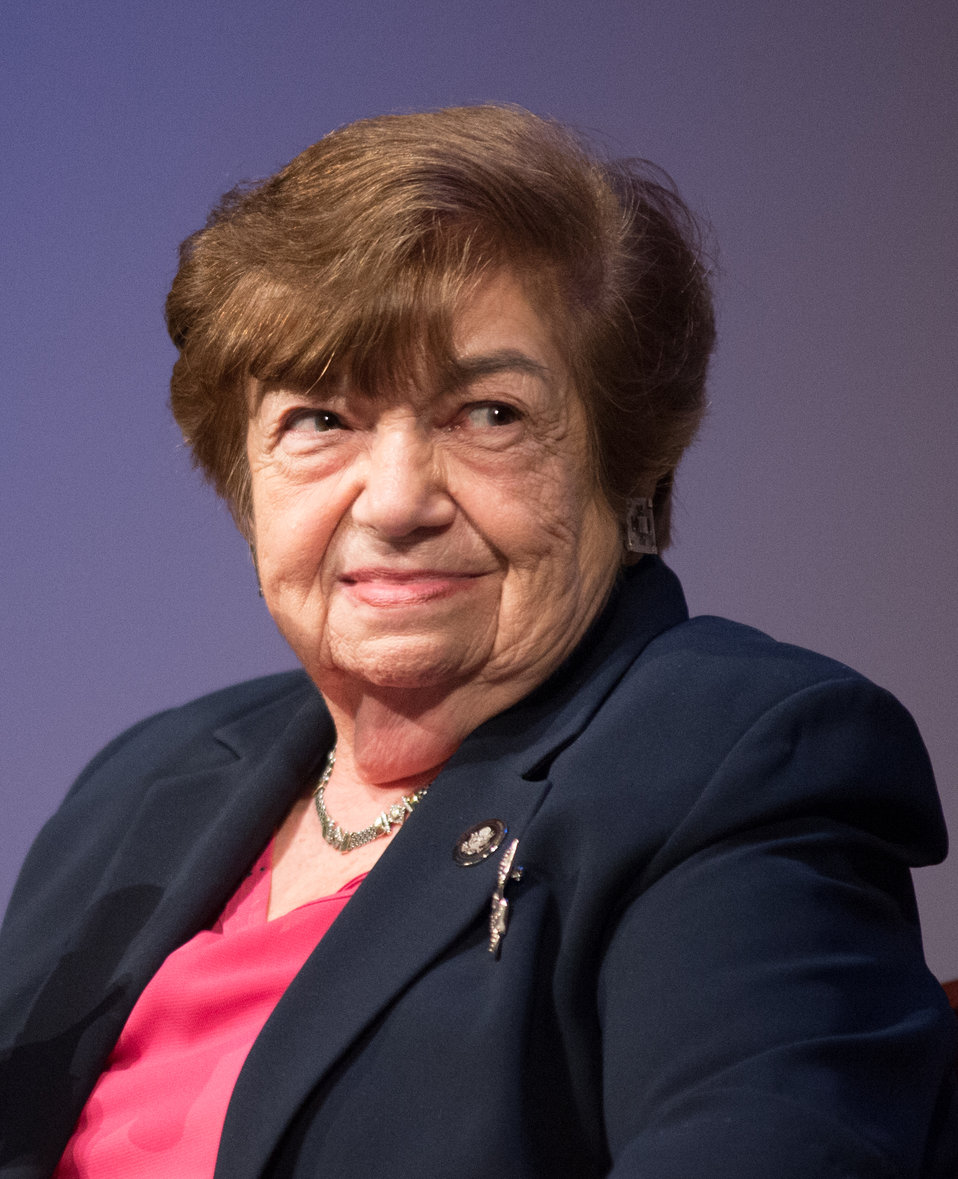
Theresienstadt Concentration Camp Czech Jewish Holocaust Survivor Ela Stein-Weissberger spoke during the 2013 Federal Inter-Agency Holocaust Remembrance Day, at the Lincoln Theater, on Wednesday, April 17, 2013, in Washington, D.C. Ms. Stein-Weissberger talks about her experience of ‘The Night of Broken Glass’, when the Nazi smashed the Stein home. During her imprisonment at Theresienstadt Concentration Camp, she took part in a children’s play ‘Brundibar’ that was part of a German SS propaganda film that showed a model of camp conditions and activities. The film was never released by the German government, but did survive the war. She was shown in the cast, when it was used in the CBS News program – 60 Minutes – ‘The Nazi Deception.’ She also displayed her cloth ‘Jude’ badge that identified her as being Jewish during the Nazi uprising. Since the 1979 President’s Commission on the Holocaust, an annual proclamation signed by the President of the United States recognizes the importance of remembering the atrocities of the Holocaust that should never be forgotten or be ignored.